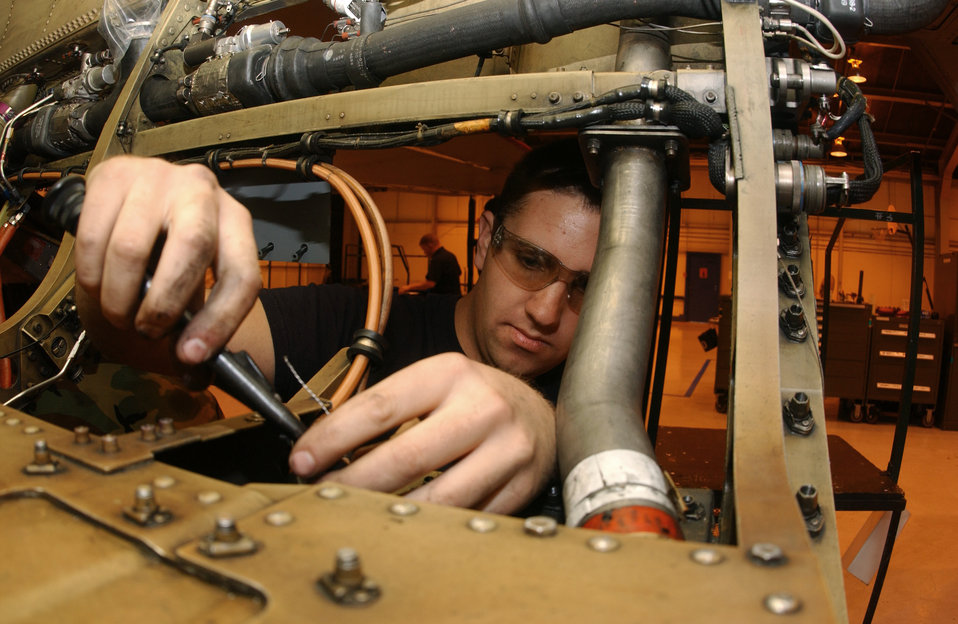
Getting ready for QA

LUKE AIR FORCE BASE, Ariz. -- Airman Paul Lessard checks for any damaged or missing clamps before a quality assurance inspection here recently. Airman Lessard is an F-16 crew chief assigned to the 56th Equipment Maintenance Squadron.